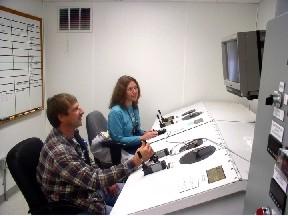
Hanford waste retrieval

Nuclear chemical operators at the controls of the waste retrieval operations taking place in Tank C-103 at the Hanford Site near Richland, WA.